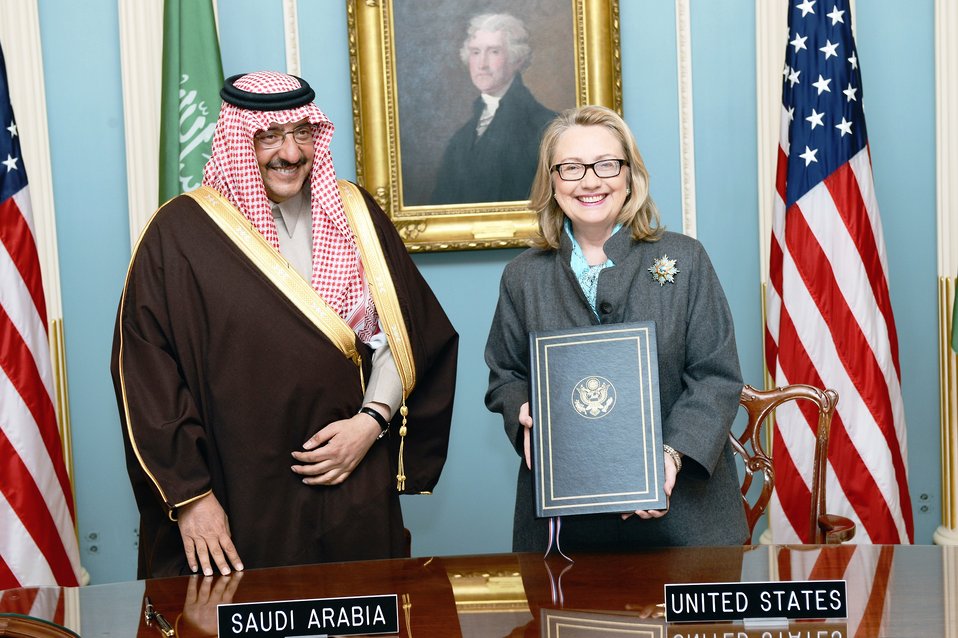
Secretary Clinton and Saudi Prince Mohammed bin Naif bin Abdulaziz Pose for a Photo

U.S. Secretary of State Hillary Rodham Clinton poses for a photo with Interior Minister of Saudi Arabia, Prince Mohammed bin Naif bin Abdulaziz, after a signing ceremony at the U.S. Department of State in Washington, D.C., January 16, 2013.